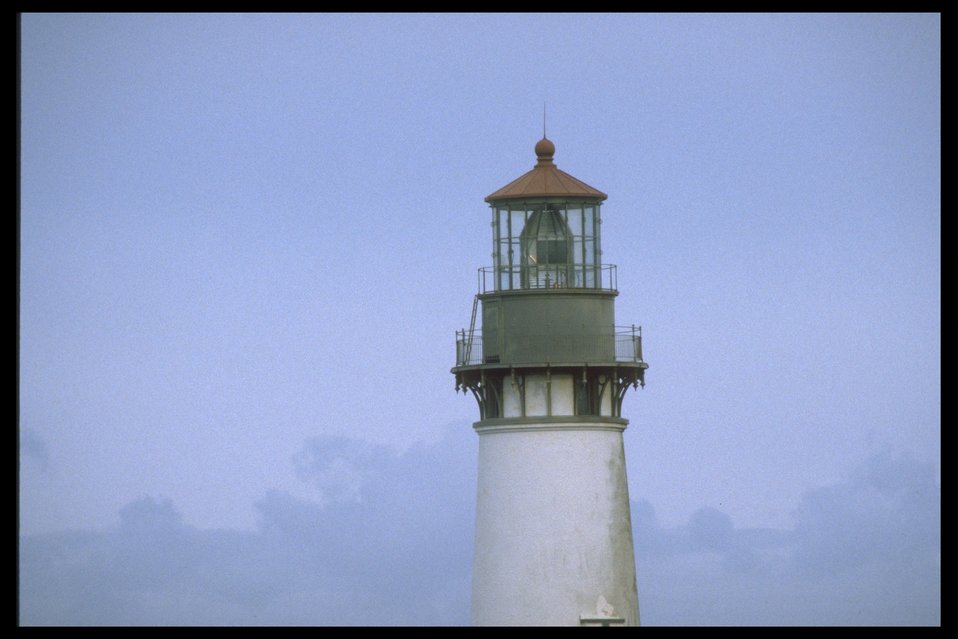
Yaquina Head Lighthouse.